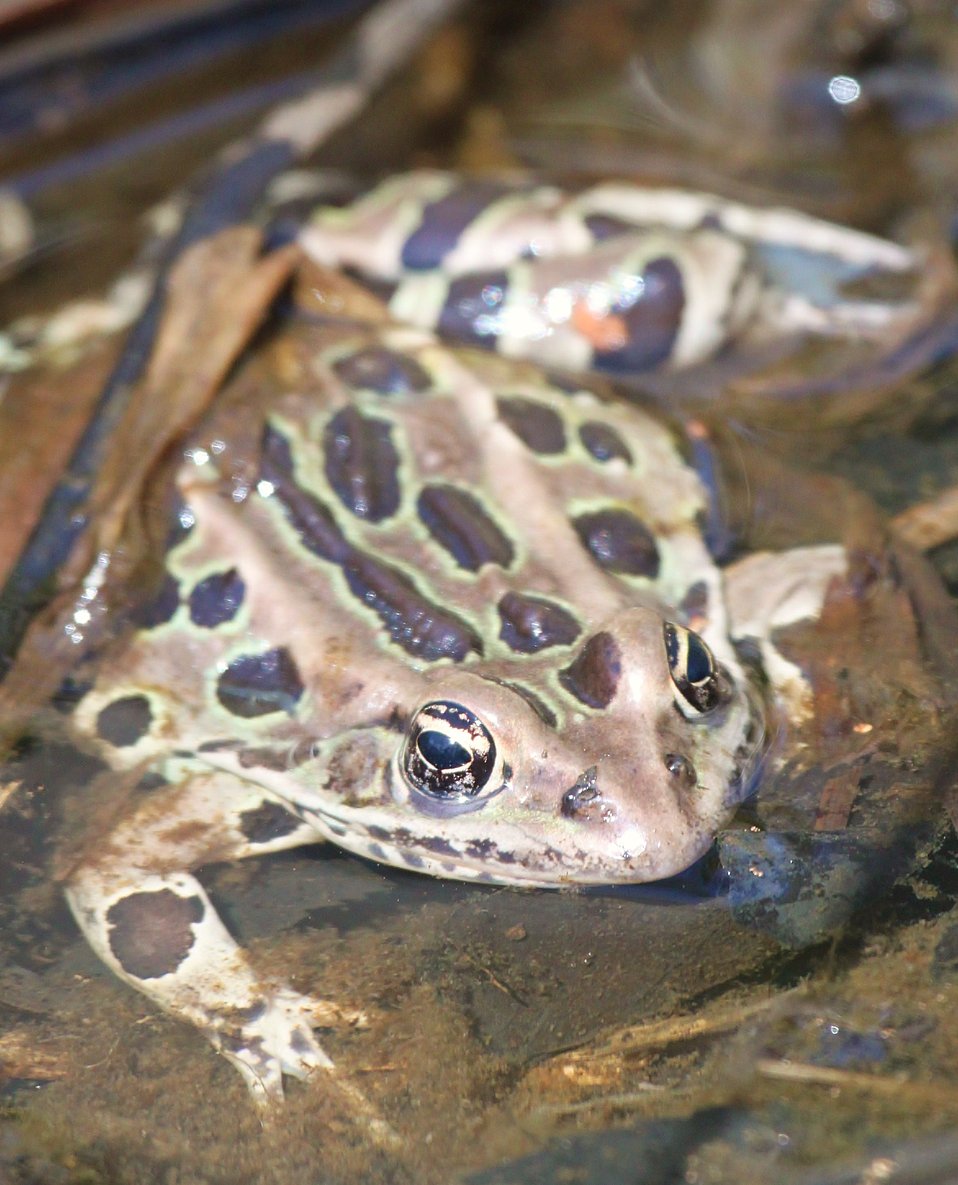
Leopard frog at Missisquoi National Wildlife Refuge.